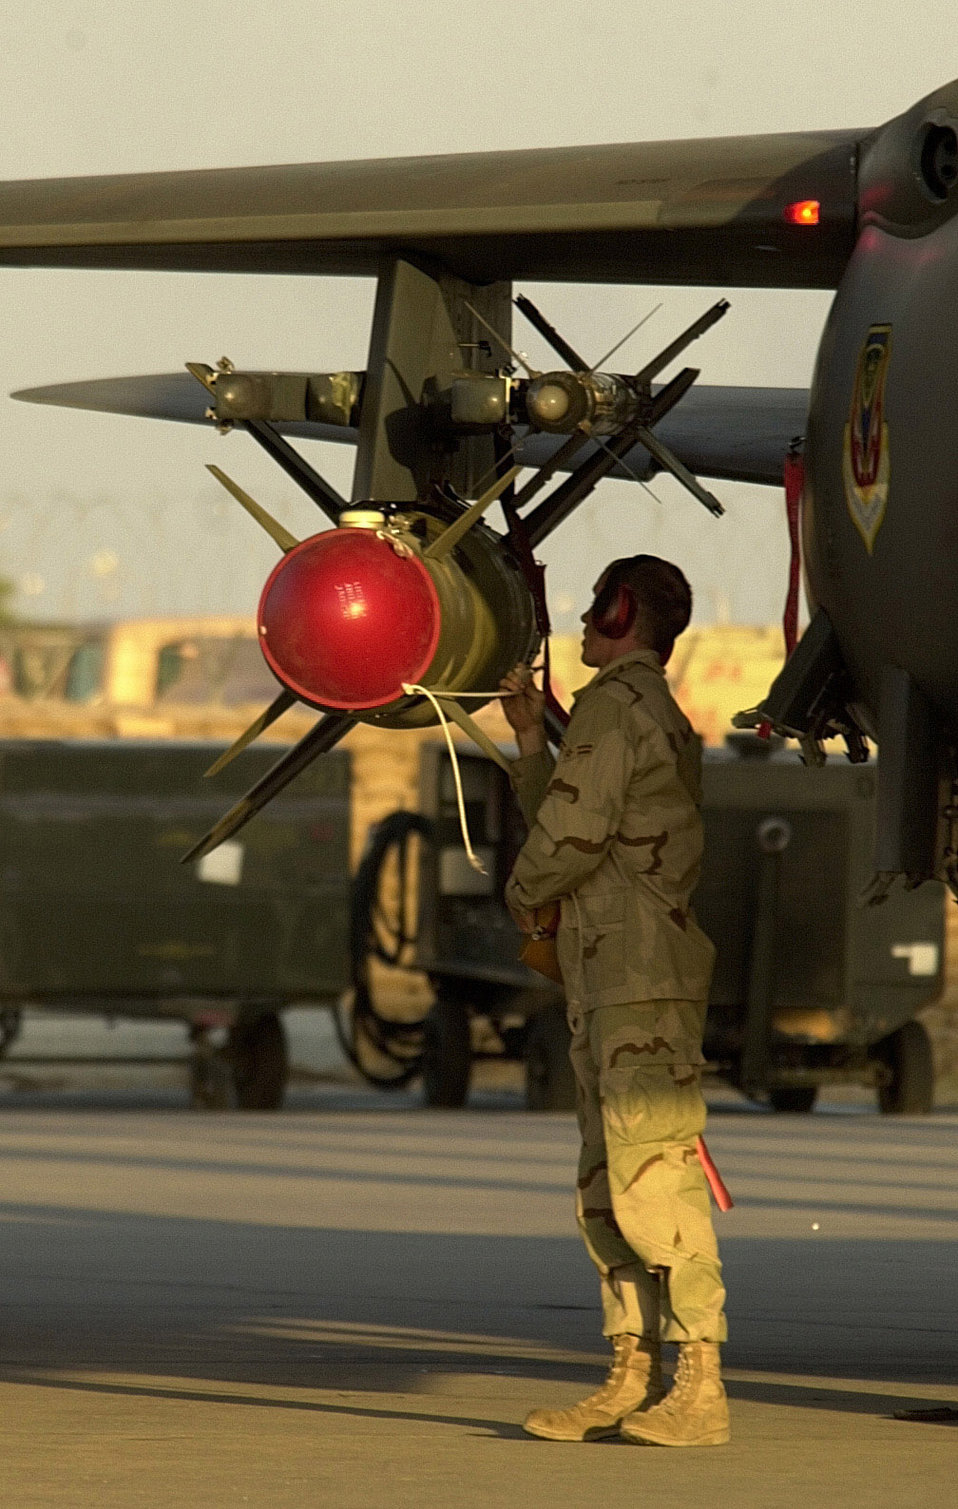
Uncovered

OPERATION ENDURING FREEDOM -- An Air Force crew chief from the 332nd Air Expeditionary Group removes the safety cover on a munition on an F-15E Strike Eagle at an operating location in support of the U.S. Central Command execution of Operation Enduring Freedom. In the first 33 days of OEF, the Air Force flew more than 2,800 sorties, which was about 45 percent of all OEF sorties.